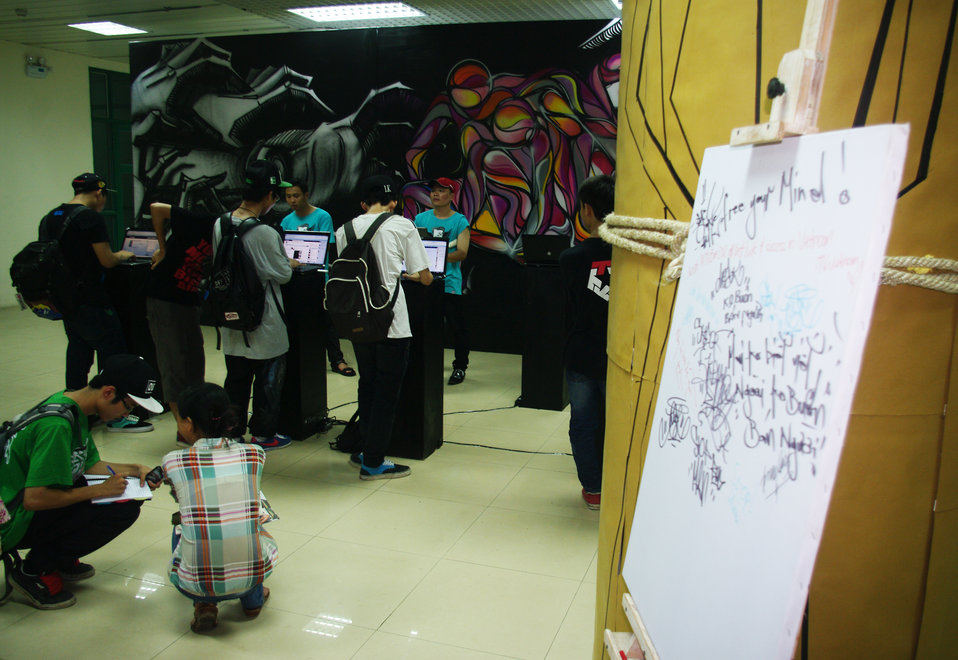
MTV EXIT opens Youth Forum in Hanoi